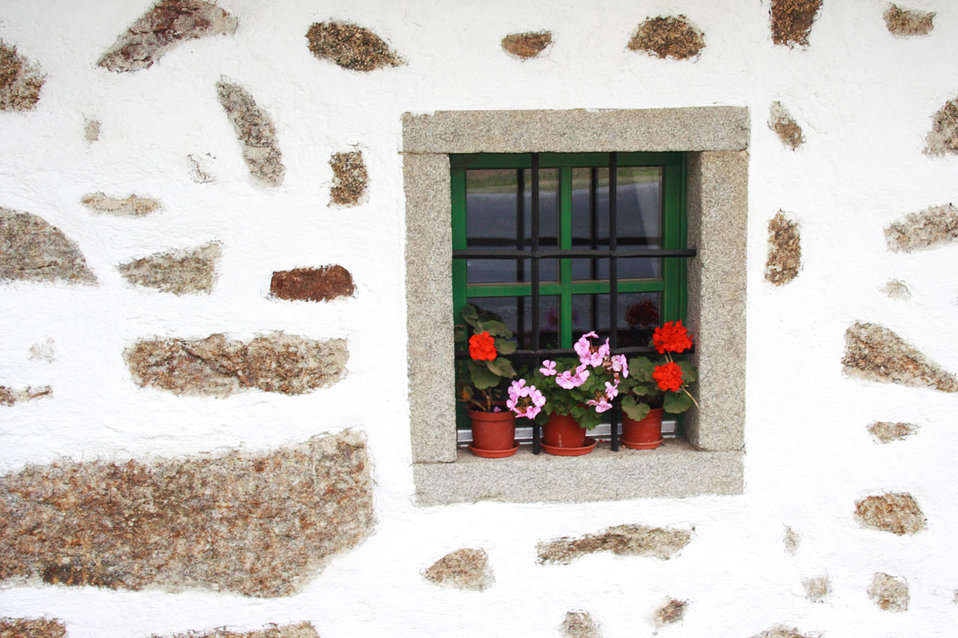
Cottage window with flowers.